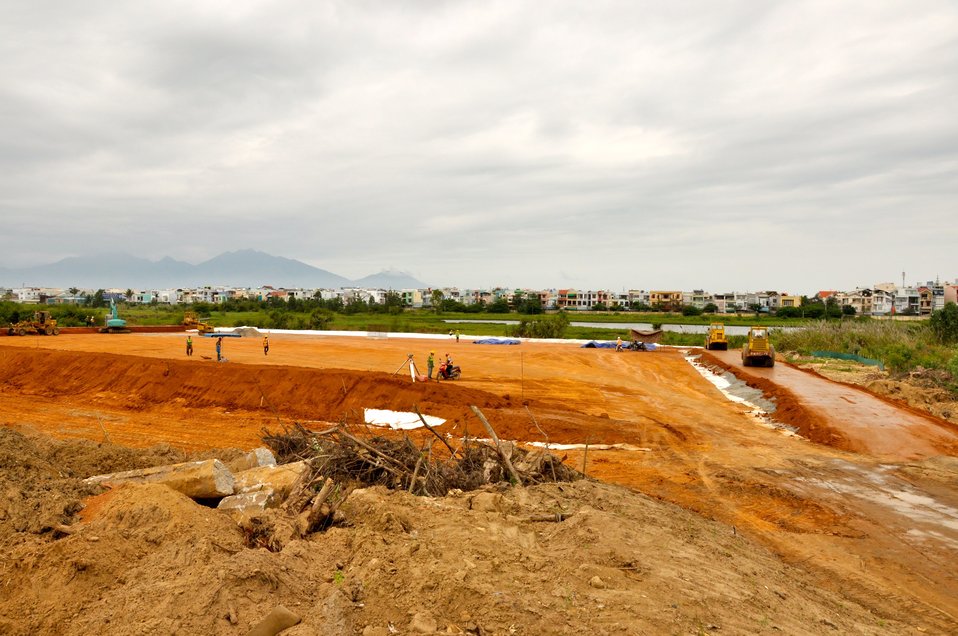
Site Preparation for Environmental Remediation of Dioxin Contamination at Danang Airport

Danang Airport, January 22, 2013